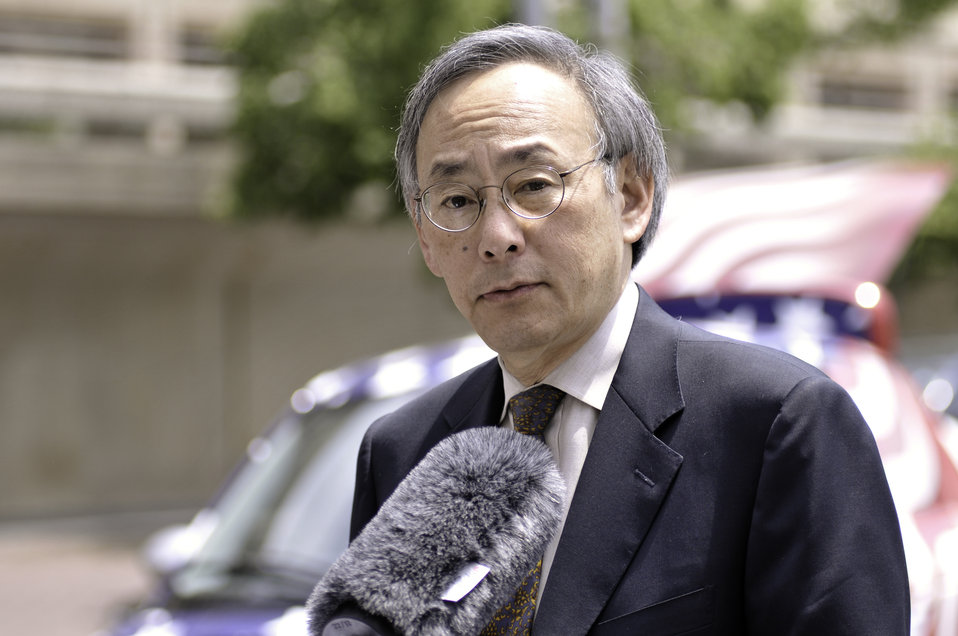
Clean Fleets Announcement 8 of 14

Sec. Steven Chu, US Department of Energy speaks at a Clean Fleets event held at the Department of Energy.